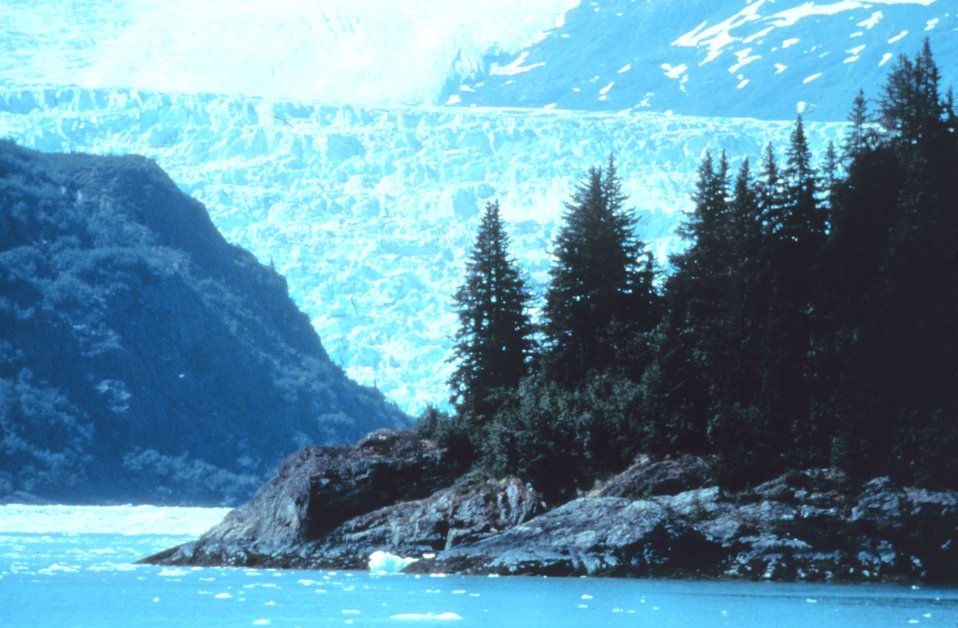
A glacier looming above a rocky point